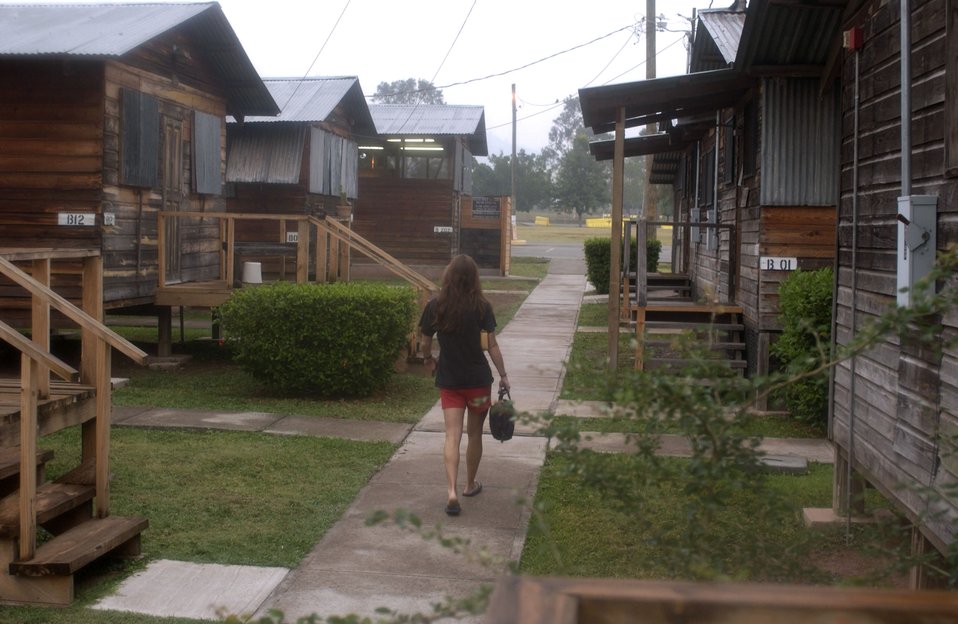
Soto Cano getting permanent makeover

SOTO CANO AIR BASE, Honduras -- Going to the showers or latrines can be a hike for troops stationed here. Joint Task Force-Bravo troops live in wooden structures called